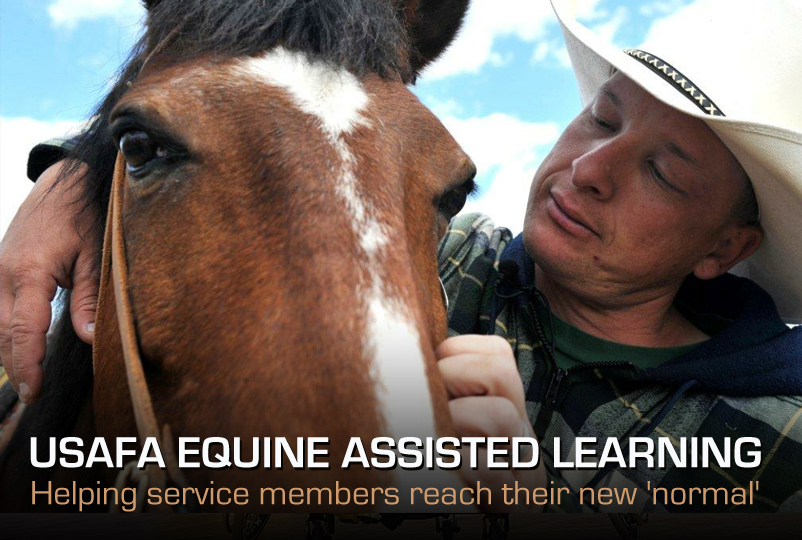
USAFA Equine Assisted Learning